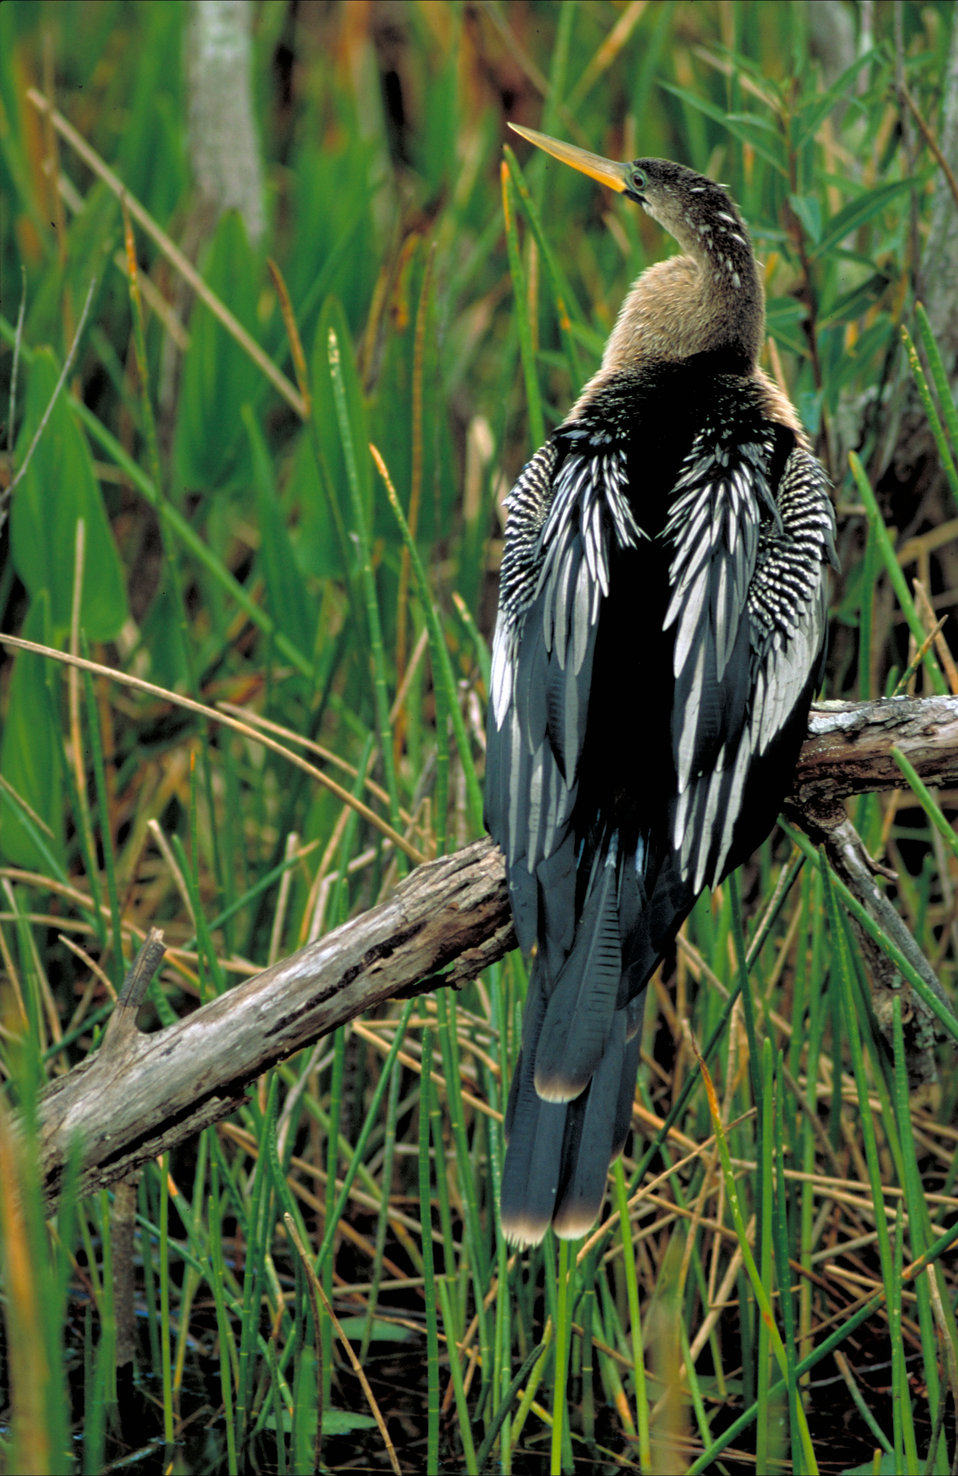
Anhinga

Close view from rear of bird sitting on dead branch.